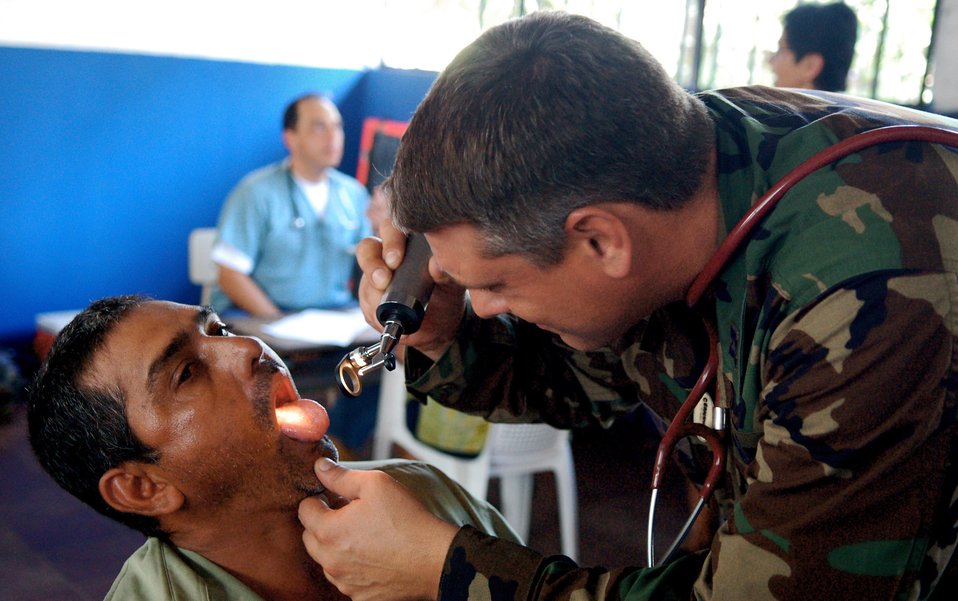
JTF-Bravo participates in El Salvador MEDRETE

Capt. Michael Ceranowski examines a local man's throat Sept. 27 at a makeshift clinic in San Juan Opico, El Salvador, during a medical readiness training exercise. Captain Artiga is a member of the Joint Task Force-Bravo Medical Element. JTF-Bravo members participated with the Salvadorian militaries in the exercise.